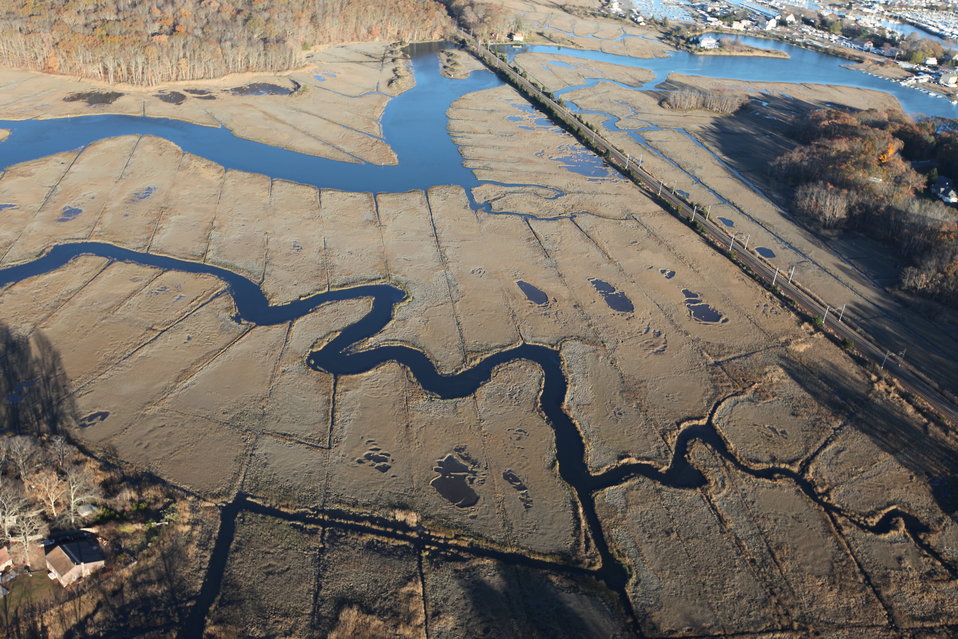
Marsh at Stewart B. McKinney National Wildlife Refuge (CT)

Aerial view of marsh at Stewart B. McKinney National Wildlife Refuge in aftermath of Superstorm Sandy.